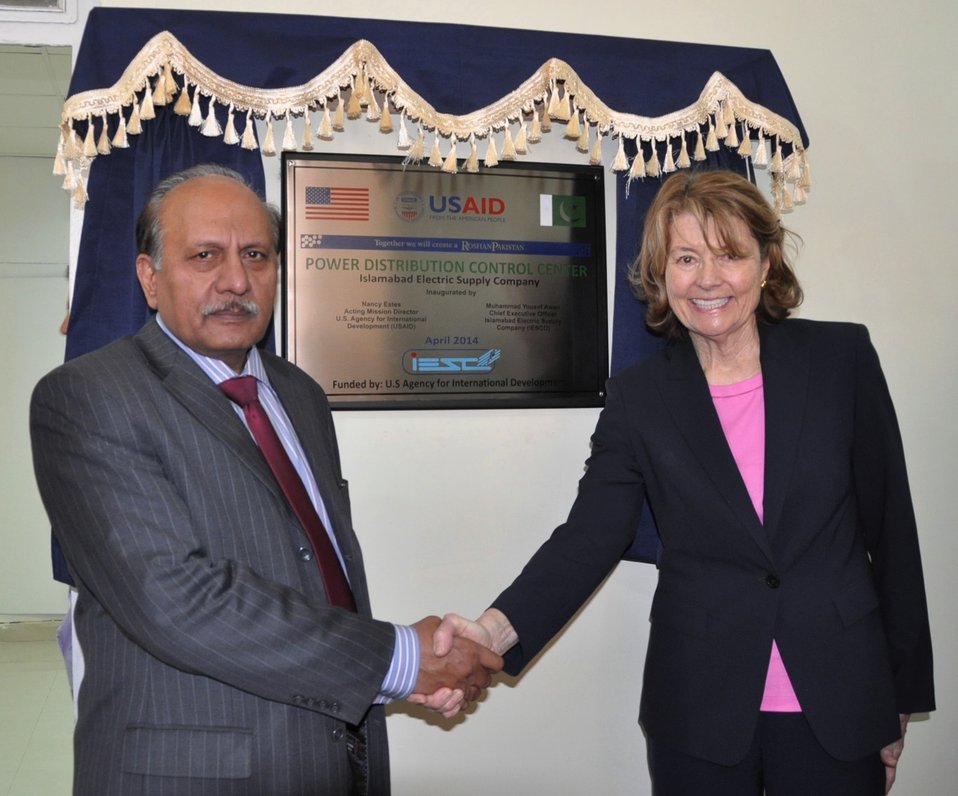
U.S. Improves IESCO’s ability to Reduce Unscheduled Load Shedding

Nancy Estes, Acting Mission Director, United States Agency for International Development (USAID), and Yousaf Awan, Chief Executive Officer, Islamabad Electric Supply Company (IESCO), after the unveiling of a plaque marking the inauguration of the Power Distribution Control Center (PDCC) at IESCO.